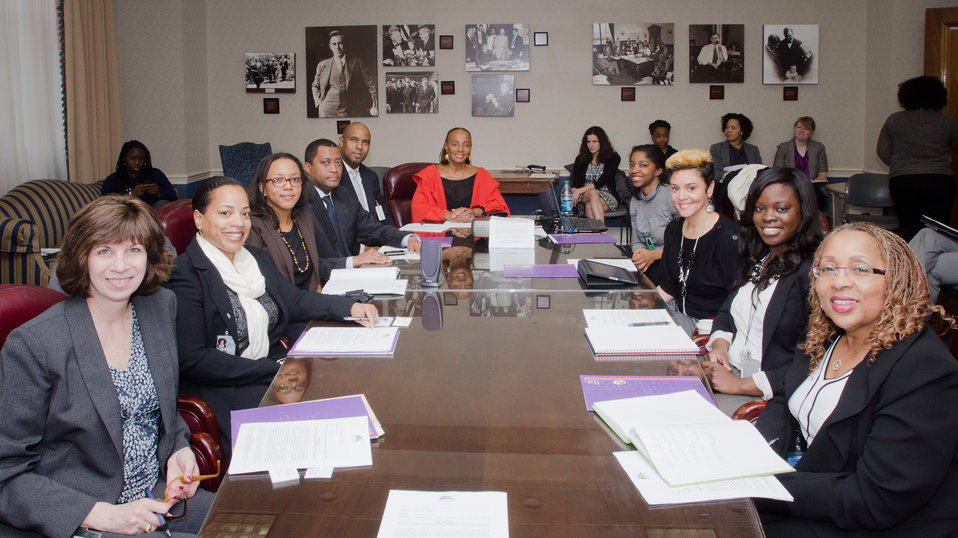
National CARES Mentoring Movement founder and Editor-in-Chief Emeritus, Essence magazine, Susan Taylor (wearing red coat), met at the Department of Agriculture (seen here) and the Department of Energy for a cross-departmental discussion, in Washington, D.C., on Tuesday, February 28, 2012. At the table are, (left – right at table) Agriculture’s National Institute of Food and Agriculture, Institute of Youth, Family and Community Assistant Director (Acting) Caroline Crocoll, Ph.D., National Defense University’s Visiting Professor from the National Nuclear Security Administration Dr. Njema J Frazier, Energy’s Office of Economic Impact and Diversity Special Assistant to the Director Saba Abebe, Agriculture Assistant Secretary for Civil Rights Dr. Joe Leonard, PCT Companies co-founder & Vice Chairman Michael D. Walker, Susan Taylor, White House Public Engagement Associate Director Heather Foster, Virginia State University School of Agriculture Interim Dean Jewel E. Hairston, Ph.D., Department of Energy’s Amber Higgins and Gloria Smith. This not-for-profit organization is dedicated to recruiting and connecting mentors with local youth and mentoring organizations to help guide under-resourced children to academic and social success across the country. This discussion provided a continuation of the White House Policy in Action conference that took place in November 2011. The focus of the discussion was about how existing federal programs and administration priorities can be leveraged with her organization, especially as it relates to science, technology, engineering and mathematics (STEM) literacy, education and rural youth.